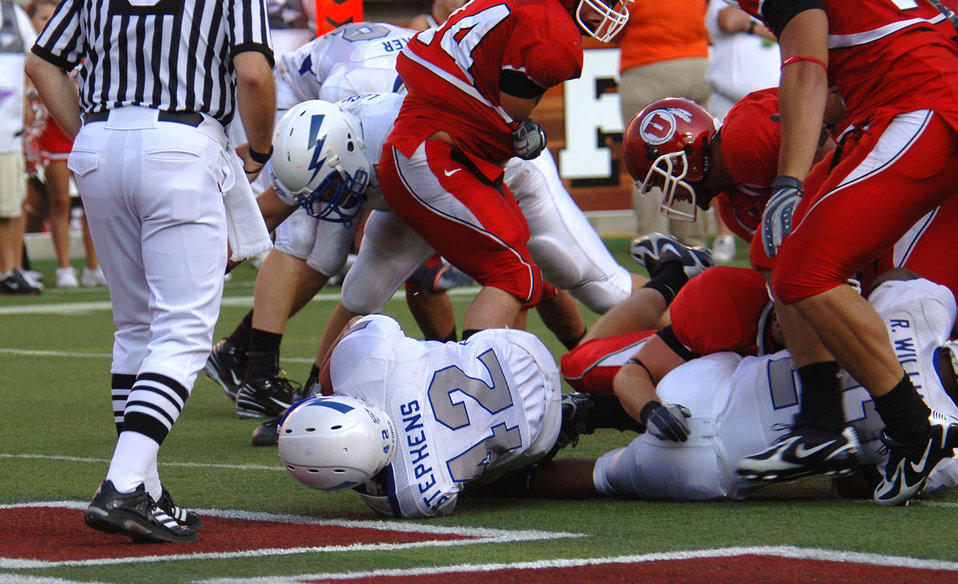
Football: Falcon defense stops Utah, 20-12

U.S. Air Force Academy Falcons freshman tailback Savier Stephens dives into the end zone for his second career touchdown Sept. 8 in Salt Lake City. He ran six times for 24 yards in Air Force's 20-12 victory.